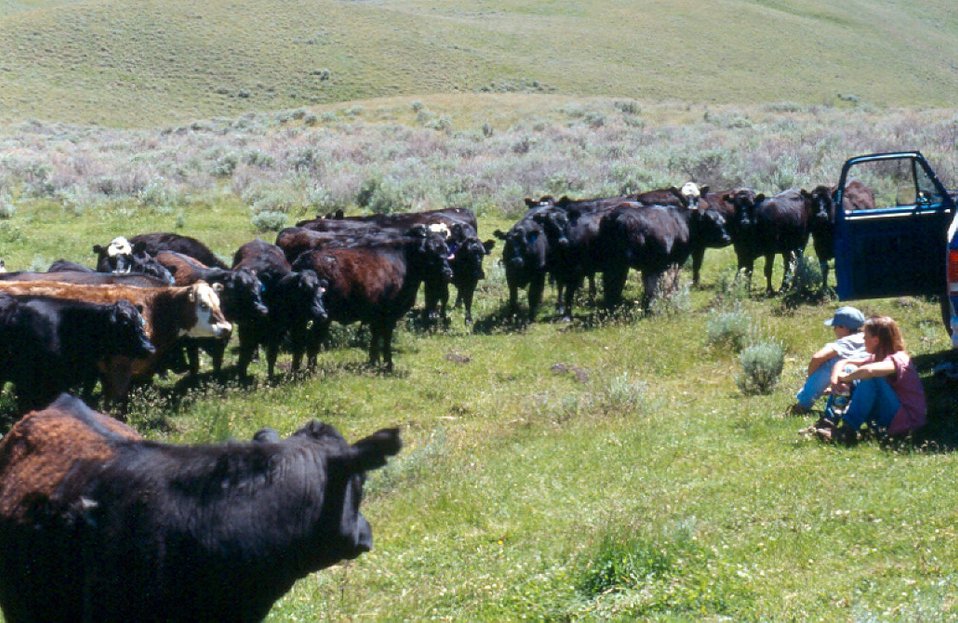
Cows Salmon Field Office UCSC Upper Columbia Salmon Clearwater District